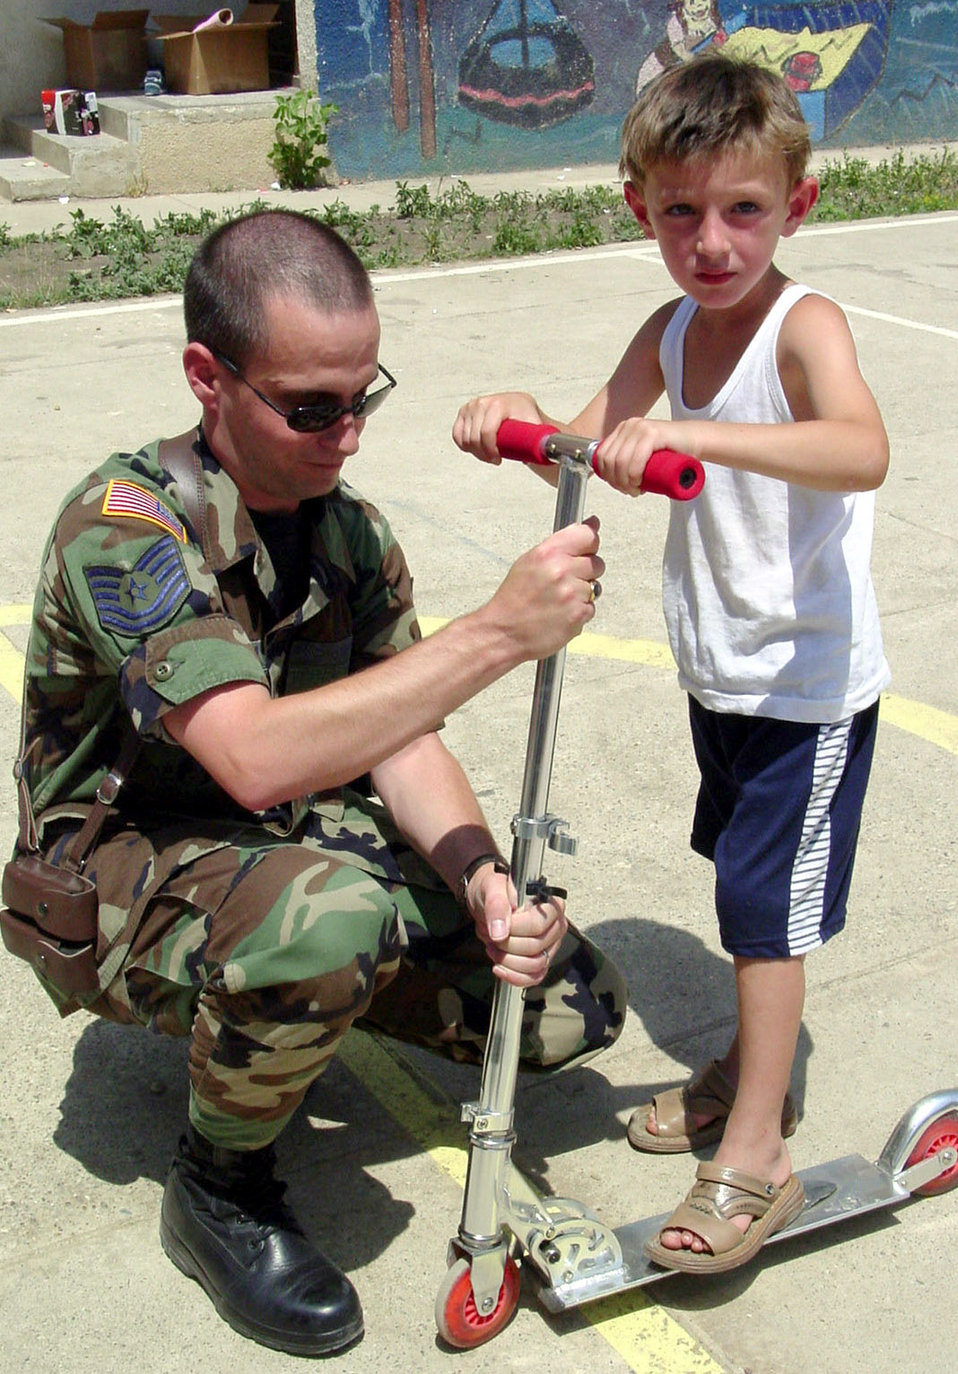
'American family' makes memories for local children

PRISTINA, Kosovo -- Tech. Sgt. Ernie Kindle readies a new scooter for 5-year-old Aragon's first scooter ride at the Pristina Mother and Child Center here. Sergeant Kindle is the Kosovo Force disbursing noncommissioned officer and is deployed from Wright-Patterson Air Force Base, Ohio.